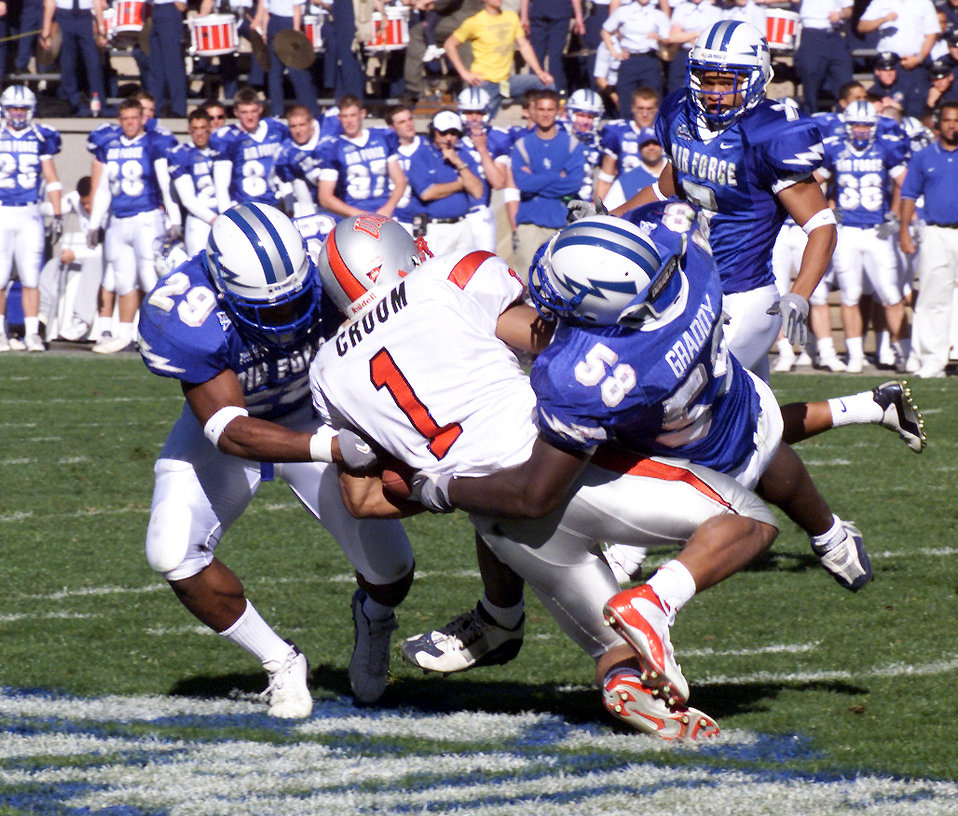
UNLV at academy

U.S. AIR FORCE ACADEMY, Colo. -- Falcon safety Larry Duncan and linebacker Marchello Graddy combine to bring University of Nevada, Las Vegas, running back Larry Croom down. The Falcon defense held UNLV to a season-low 7 points, during their 24-7 win Oct. 11.